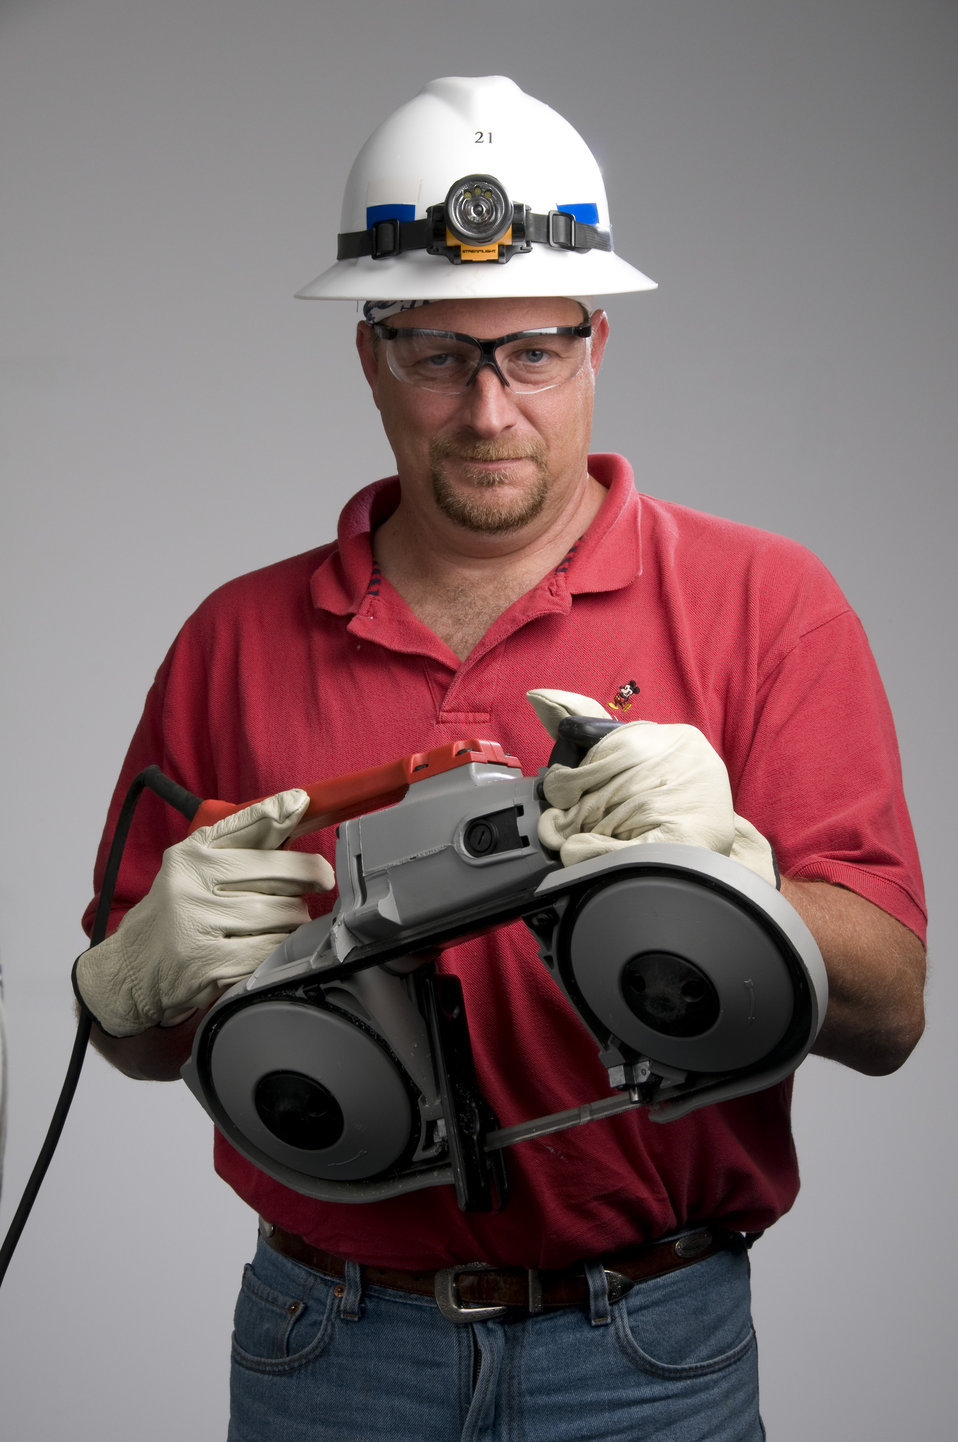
James Hall